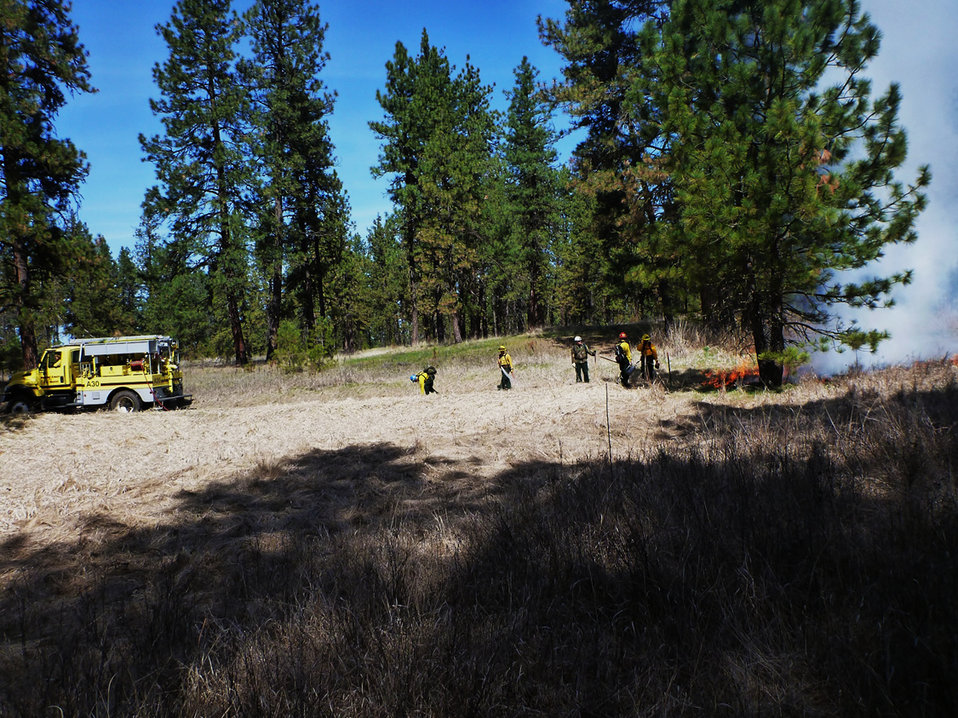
Control Lines

Federal, city and county cooperators wet control lines before lighting along the burn unit boundary.